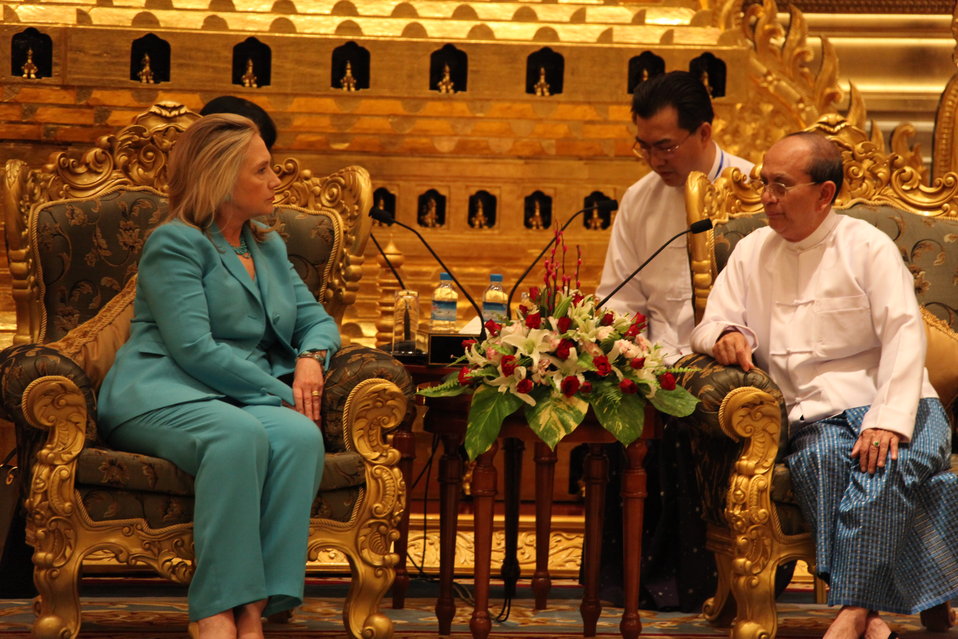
Secretary Clinton Meets With Burmese President U Thein Sein

U.S. Secretary of State Hillary Rodham Clinton meets with with Burmese President U Thein Sein at the Office of the President in Nay Pyi Taw, Burma, on December 1, 2011.